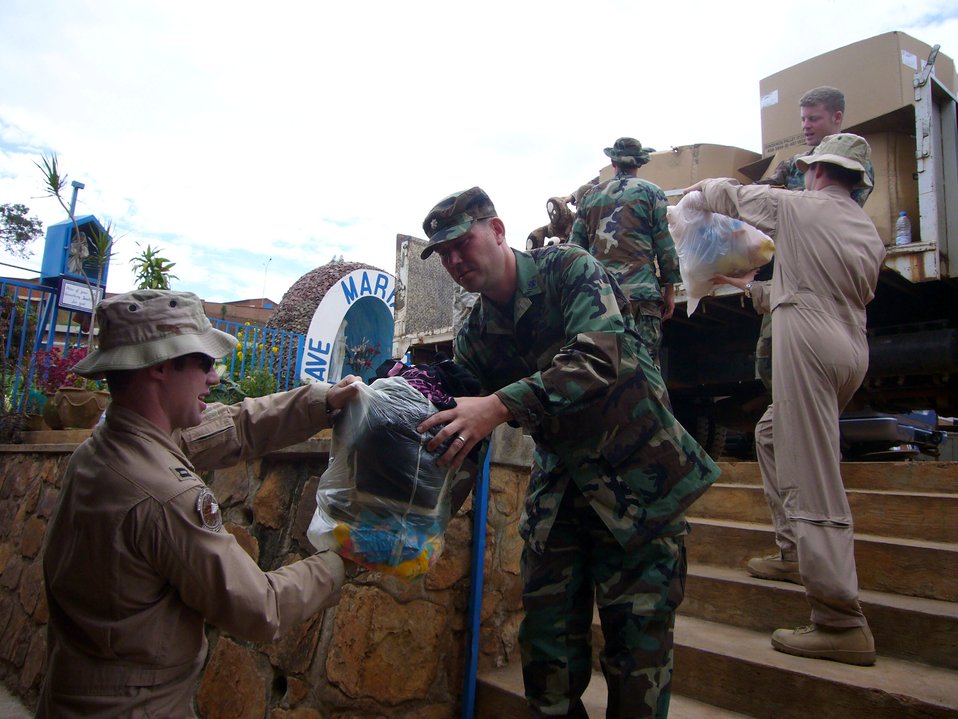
Airmen deliver donations to Rwandan orphanage

Airmen from the 786th Air Expeditionary Squadron deliver donations to an orphanage in Kigali, Rwanda, Oct. 27. The Airmen from Ramstein Air Base, Germany, and Charleston Air Force Base, S.C., are in Kigali to provide airlift support to the Rwanda Defense Force.